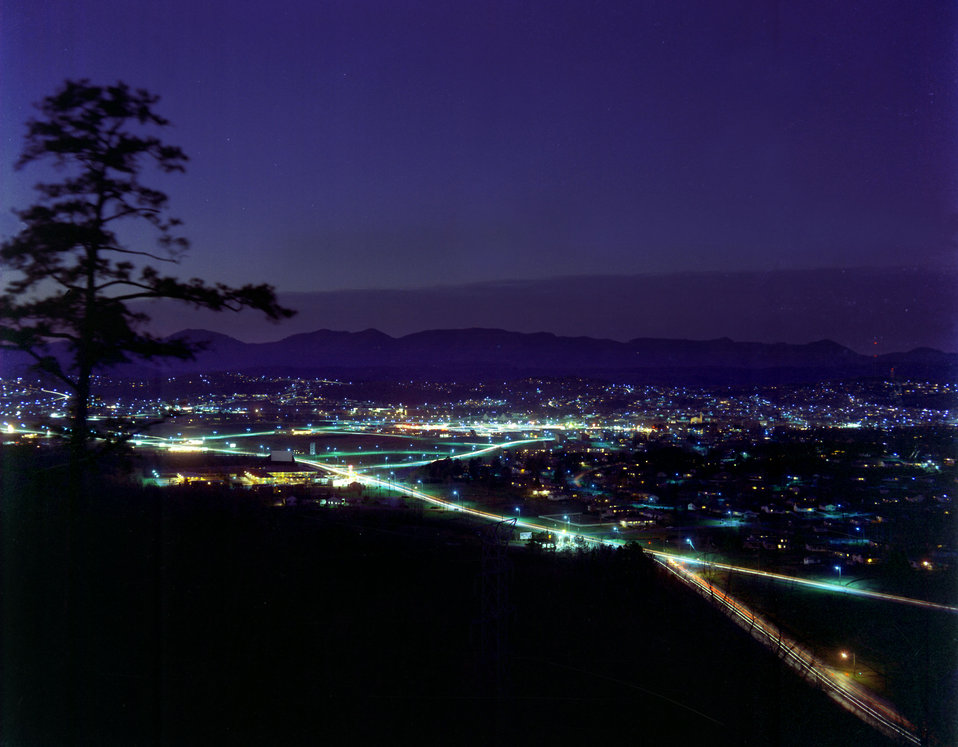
Night View of City of Oak Ridge

68-650 DOE photo by Frank Hoffman Oak Ridge Tennessee

11-1968